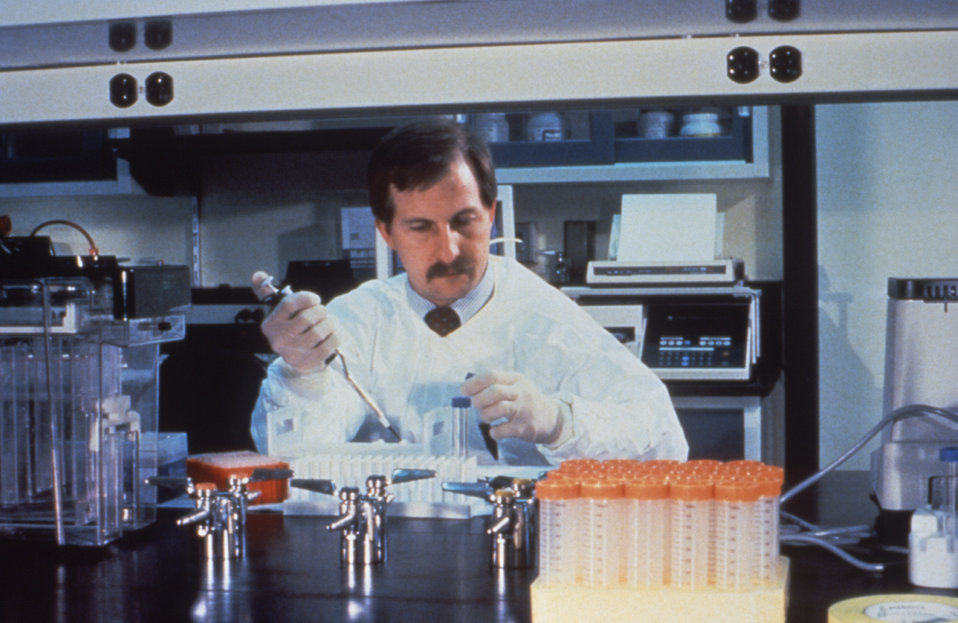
This CDC laboratorian is shown pipetting specimens while he's conducting laboratory research.